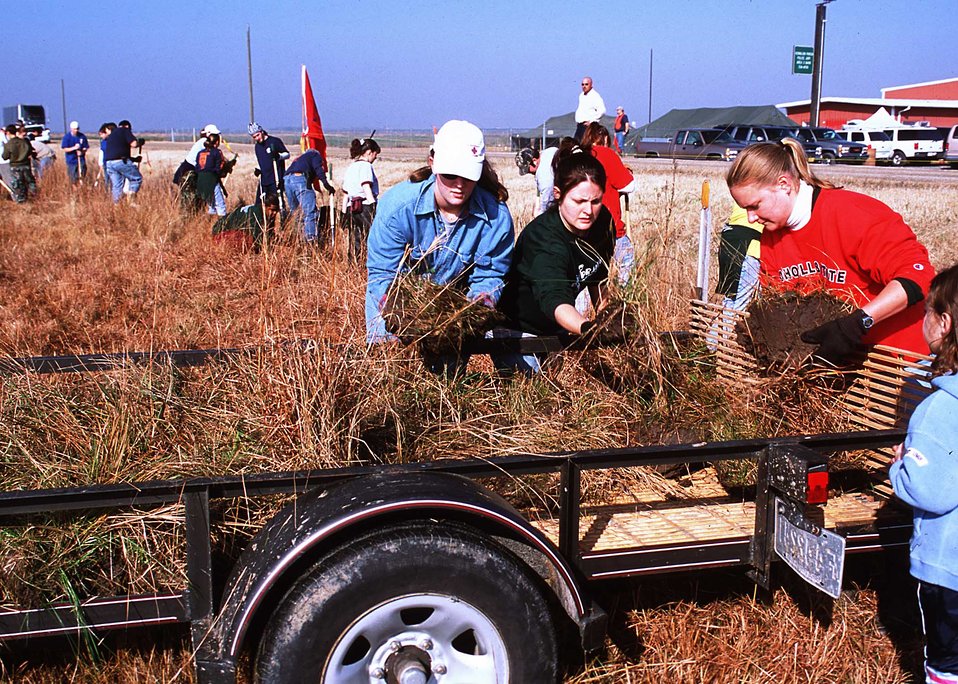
Earth team volunteers of NRCS help transplant native prairie plants from a roadside near Gueydan, Louisiana, to a restored wetland nearby.